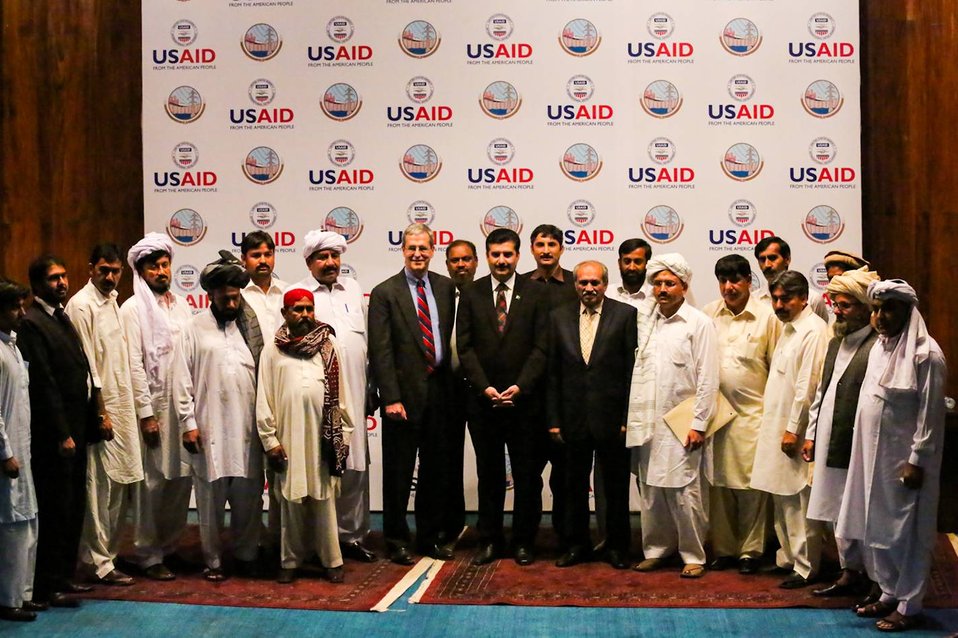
Islamabad, September 12, 2012 - Project Launch Ceremony of Waran Canal Irrigation System